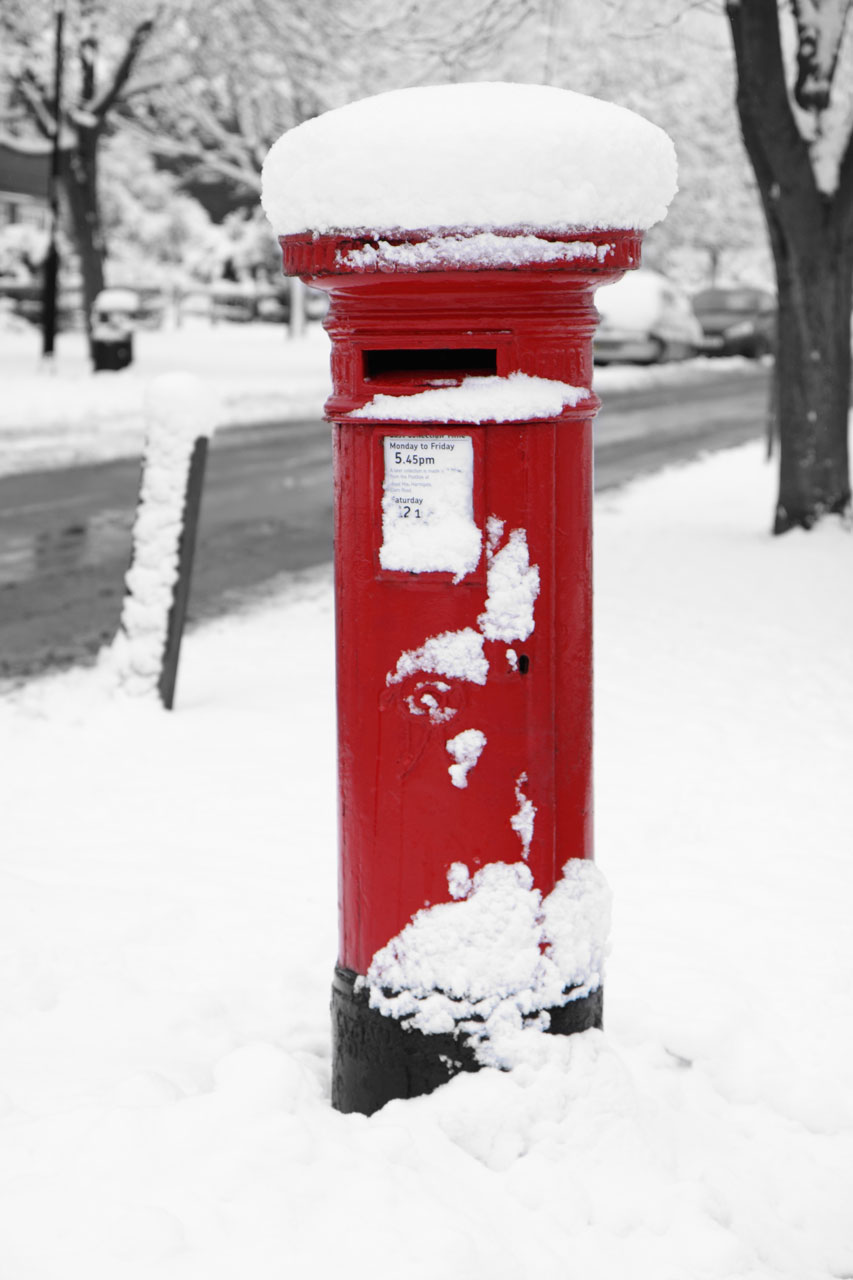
British post box in winter

British post box covered in snow.